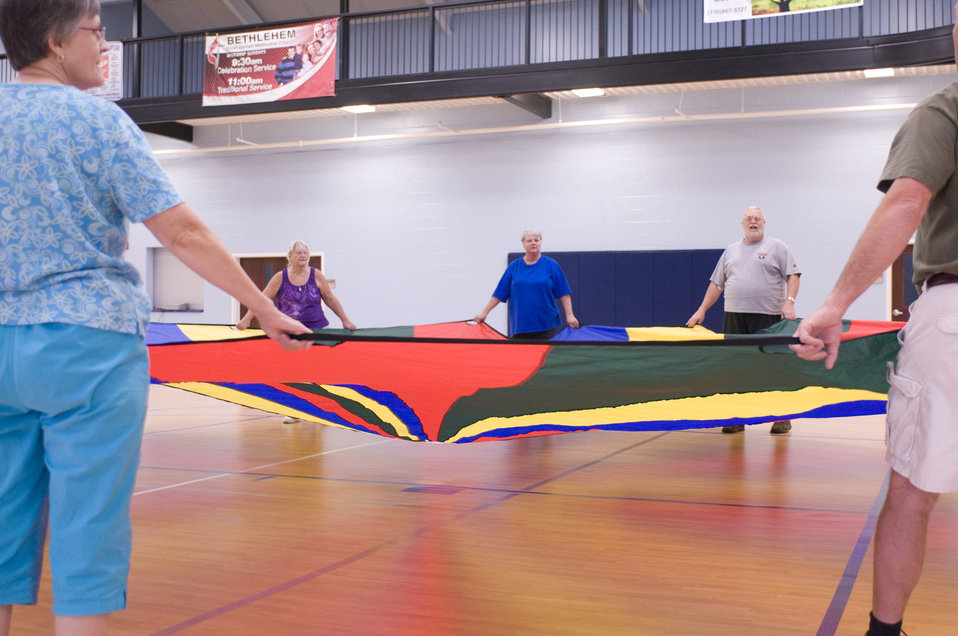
The older individuals pictured here on the wooden floor of an indoor basketball court, were participating in an exercise class consisting of stretching, and aerobic repetitive motion movements. In this particular view, the group members were working the muscles of their shoulders and arms by raising their outstretched arms over their heads then back down again, repeating this motion, while they held on to a large multicolored tarpaulin, which had been equipped with handles along its rim.